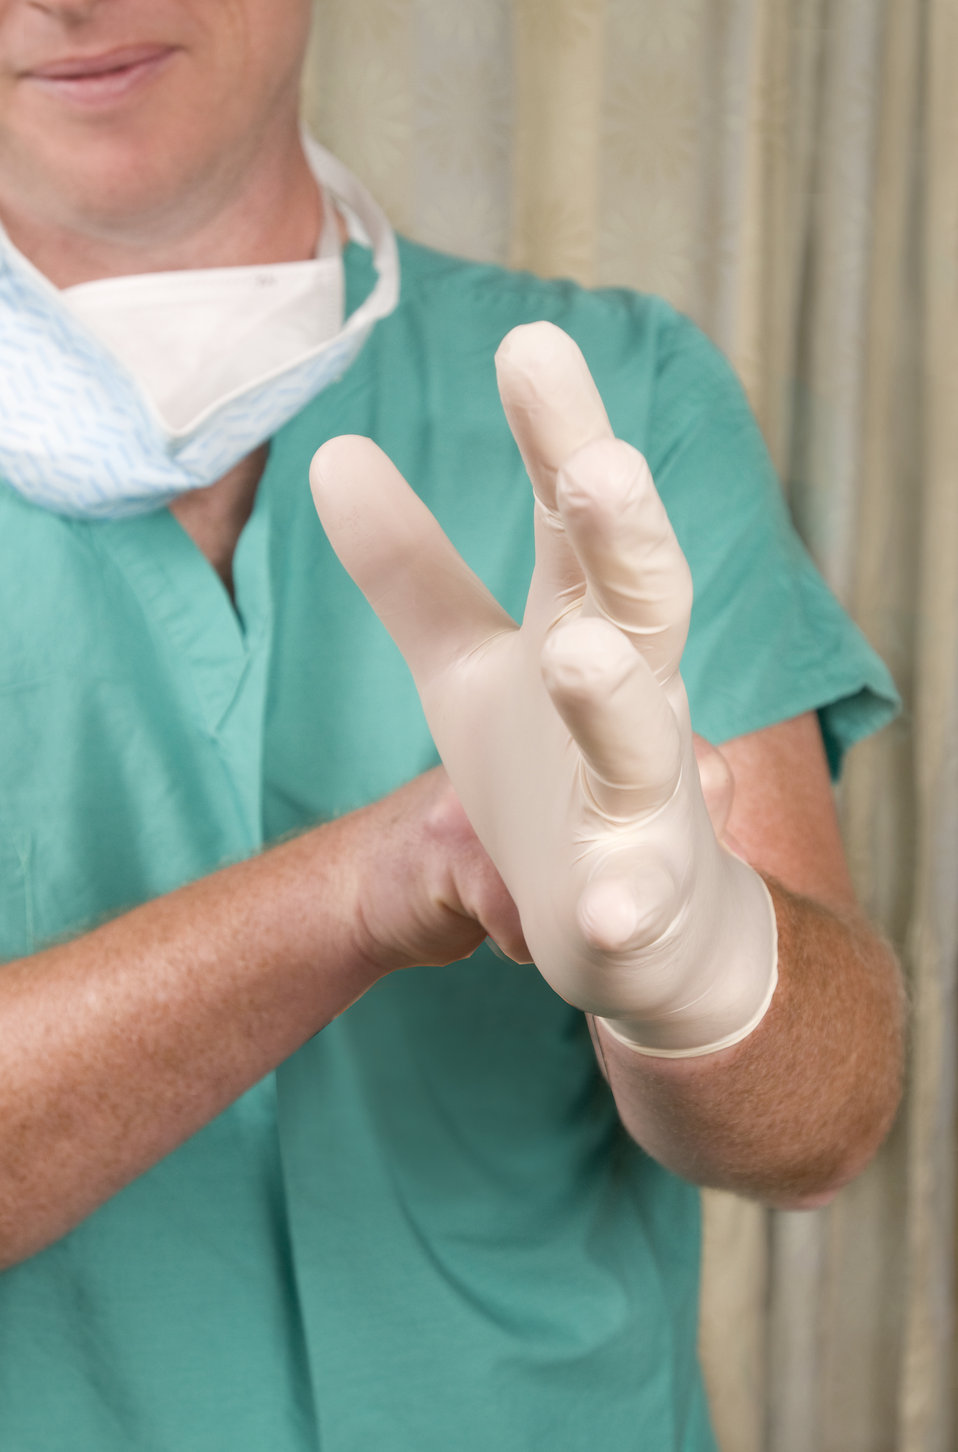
This image depicts a healthcare provider donning a pair of beige latex gloves in order to protect himself during his subsequent interaction with his next patient, or possibly-biohazardous materials.